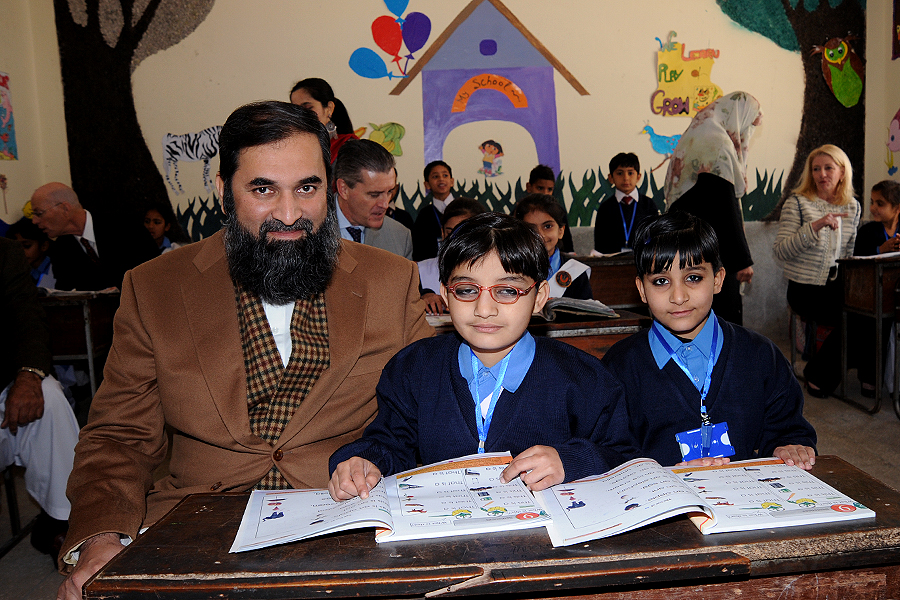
United States and Pakistan Launch the Pakistan Reading Project